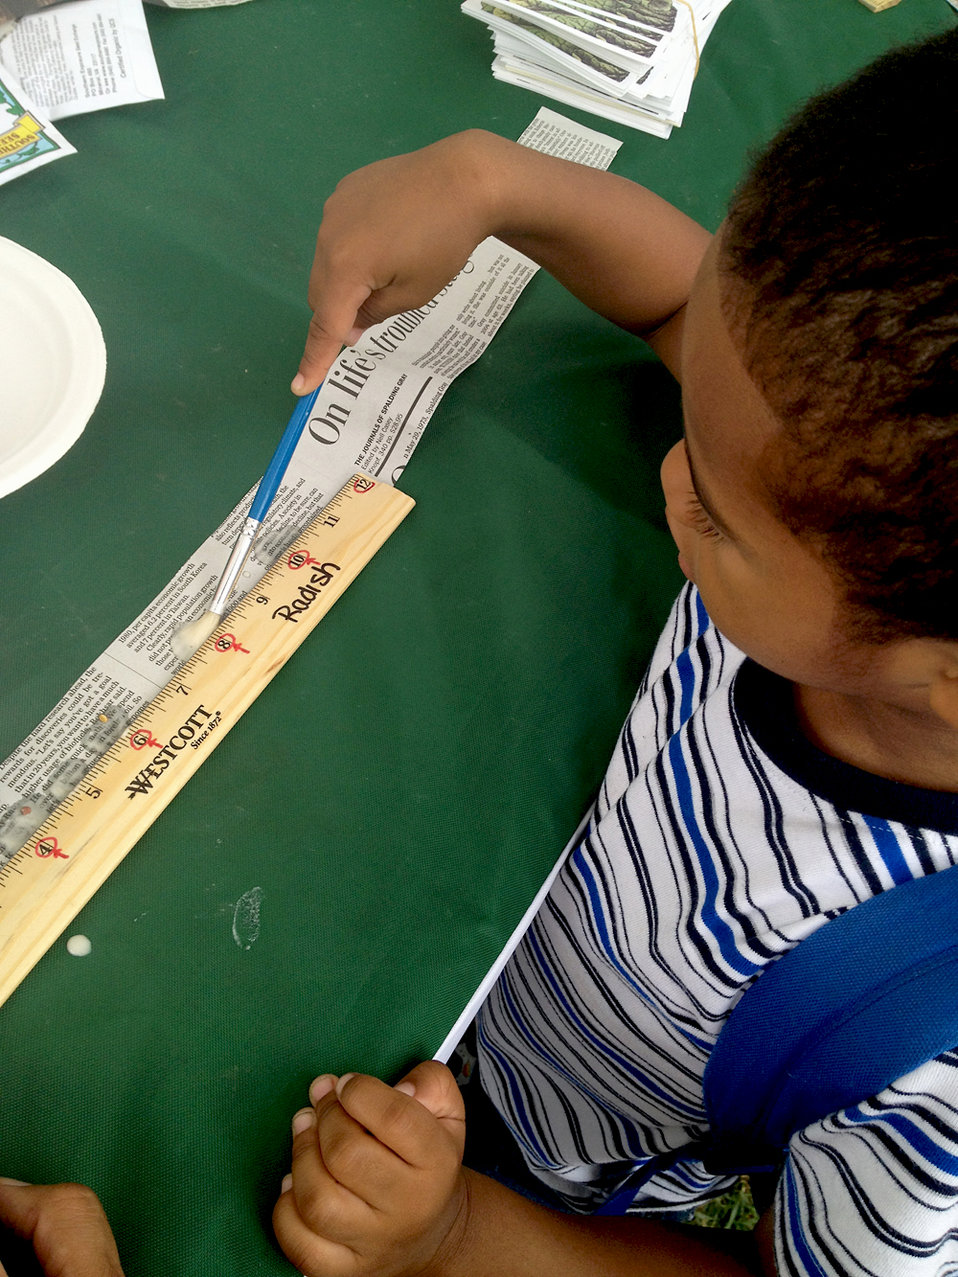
Bronson Brown pastes radish seeds 2 inches apart on recycled newspaper to plant in his garden at home on the opening day of the U.S. Department of Agriculture (USDA) Farmers Market, in Washington, D.C. on June 1, 2012. Children had the opportunity to participate in a day filled with hands-on activities to help enhance their commitment to healthy eating and 60 minutes of physical activity every day.